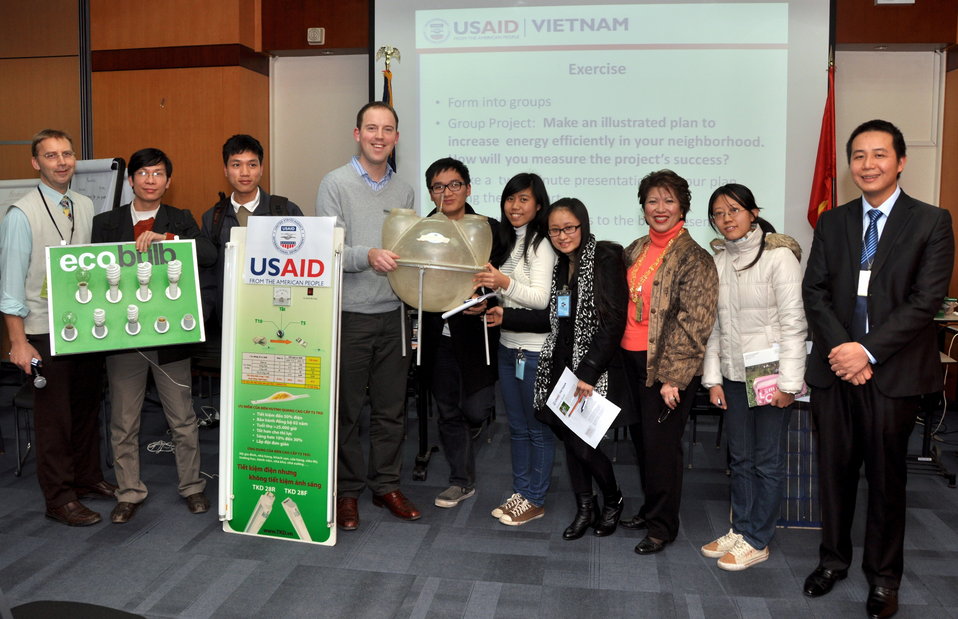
Speaker program on Climate Change and Clean Energy at the American Center

Hanoi, January 16, 2013